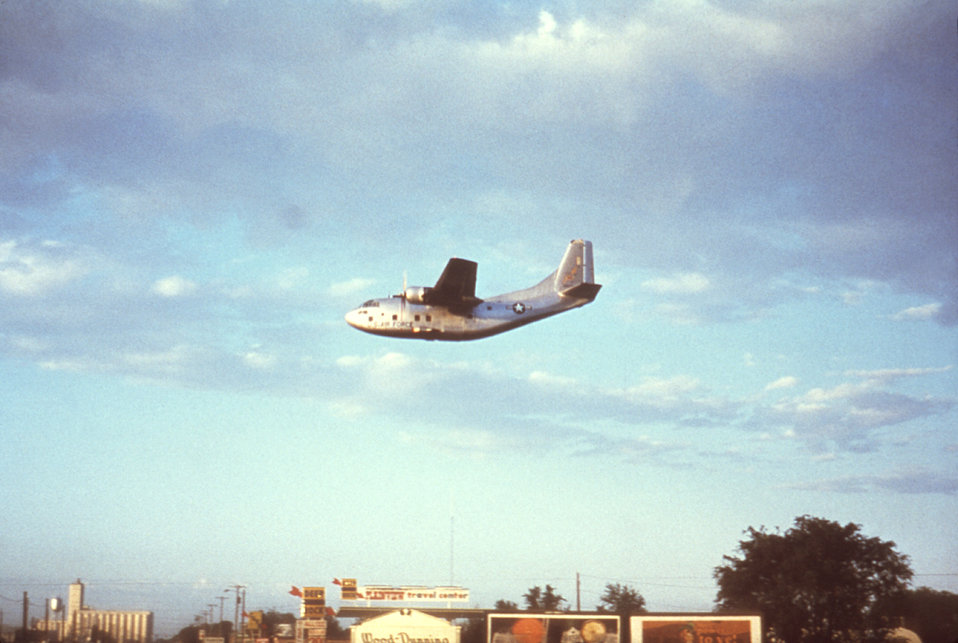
This 1981 photograph depicts a C-123 USAF aircraft dispersing an insecticidal spray over Dallas, Texas in order to combat a troublesome insect population.